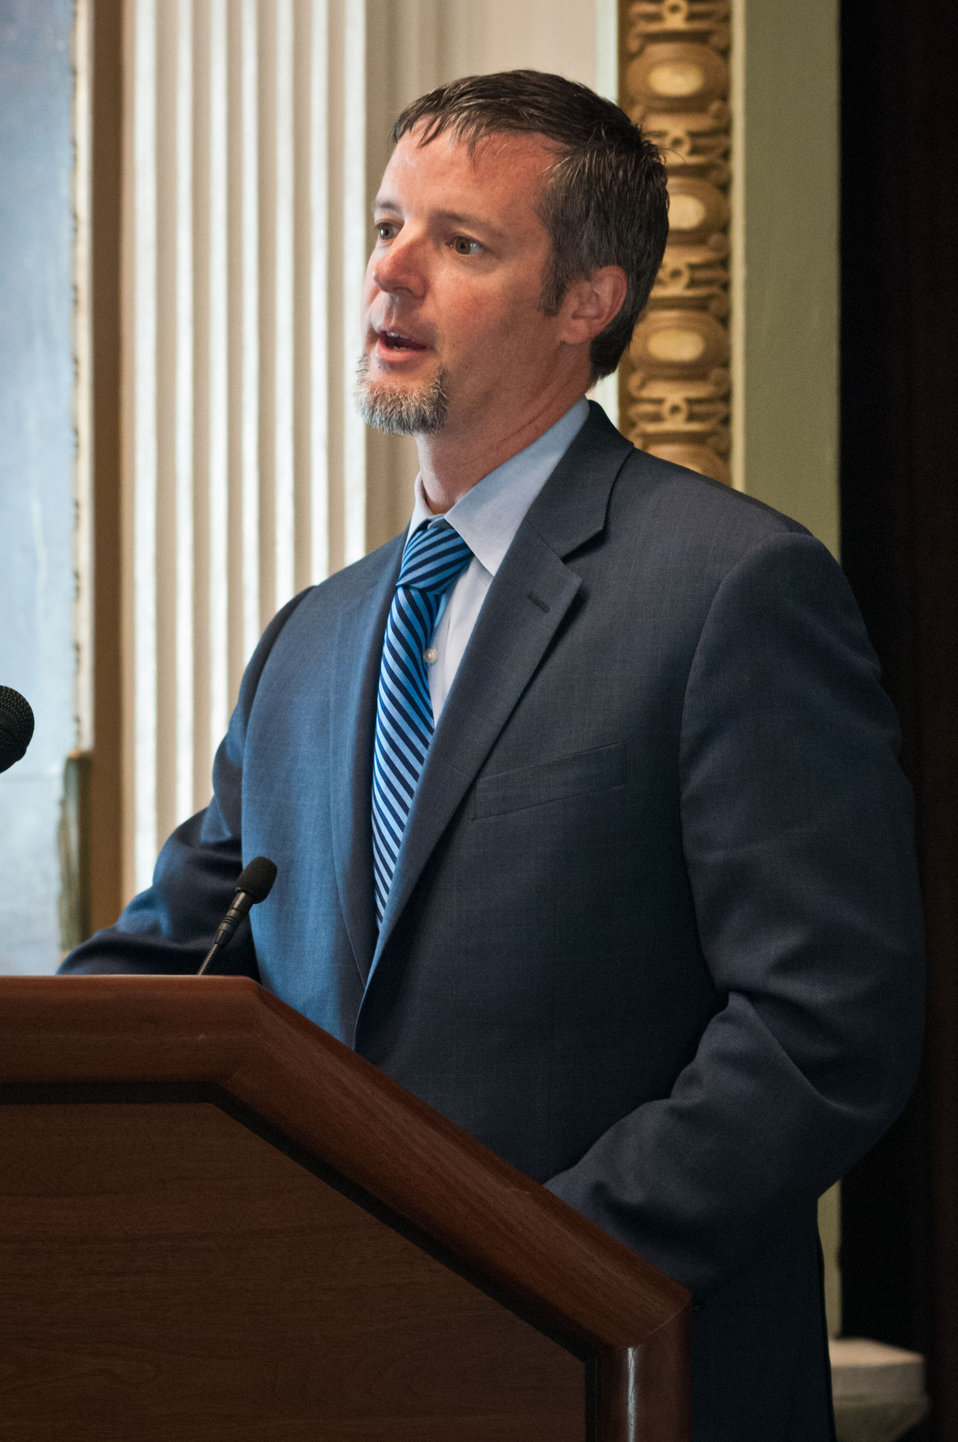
Senior Policy Advisor for Rural Affairs, White House Domestic Policy Council, Doug McKalip spoke about the Obama Administrations efforts in rural America at the Spring National Association of Farm Broadcasters (NAFB), “Washington Watch” member retreat in Washington, D.C. This year the meeting was held in the Eisenhower Executive Office Building, Indian Treaty Room on Tuesday, April 24, 2012, featuring United Sates Department of Agriculture and Obama Administration officials. This opportunity provides an occasion to highlight efforts to rebuild and revitalize rural America, including efforts for the agricultural community. NAFB is the recognized and trusted source of agricultural and rural lifestyle information for America with approximately 200 members who broadcast via radio in nearly every state in the country.